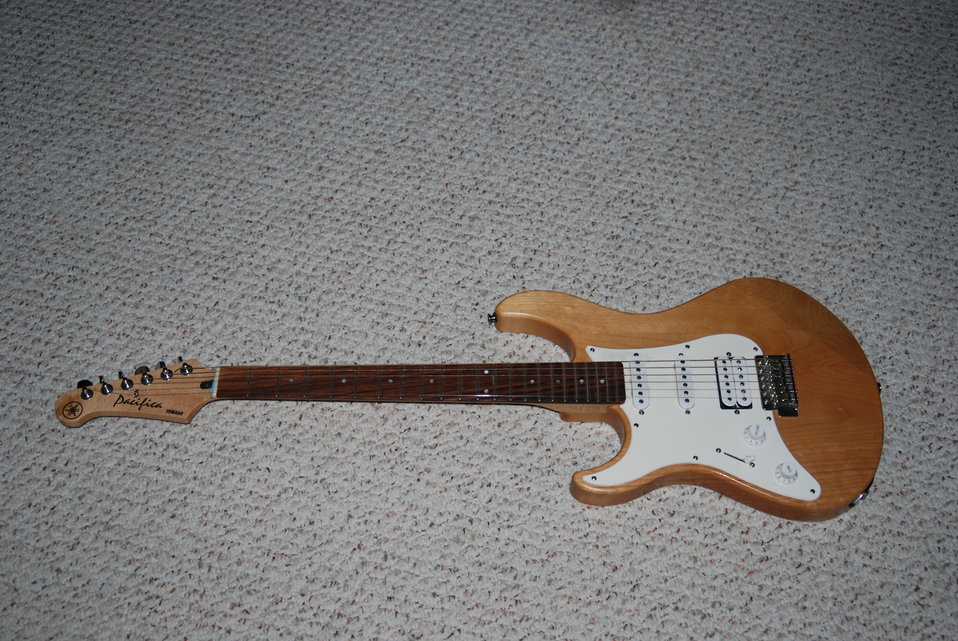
A left handed Yamaha Pacifica (1 of 2)